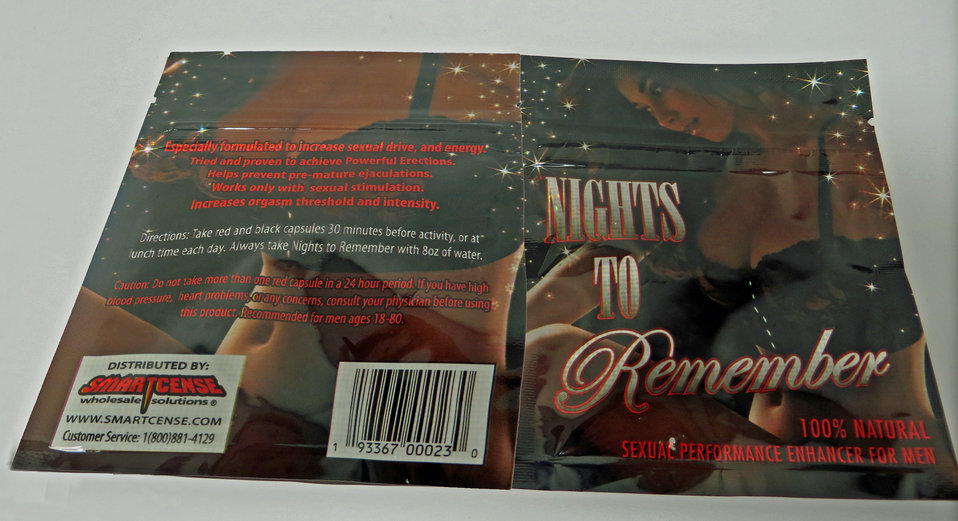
Nights to Remember

June 10, 2013 - The FDA is advising consumers not to purchase or use 'Nights to Remember,' a product promoted and sold for sexual enhancement. The product was found to contain undeclared sildenafil. For more information, go to www.fda.gov/Drugs/ResourcesForYou/Consumers/BuyingUsingMe...

And read this Consumer Update: Beware of Fraudulent ‘Dietary Supplements’